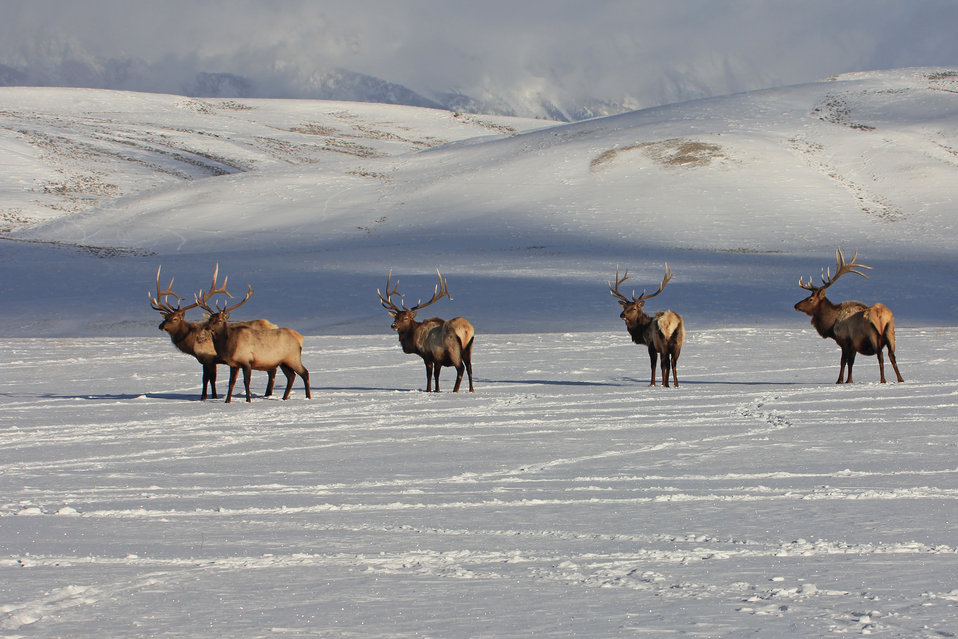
Bull Gathering

The white tips of these bull elks' antlers are highlighted by the morning sun.

Credit: USFWS / Tony Hough, National Elk Refuge volunteer